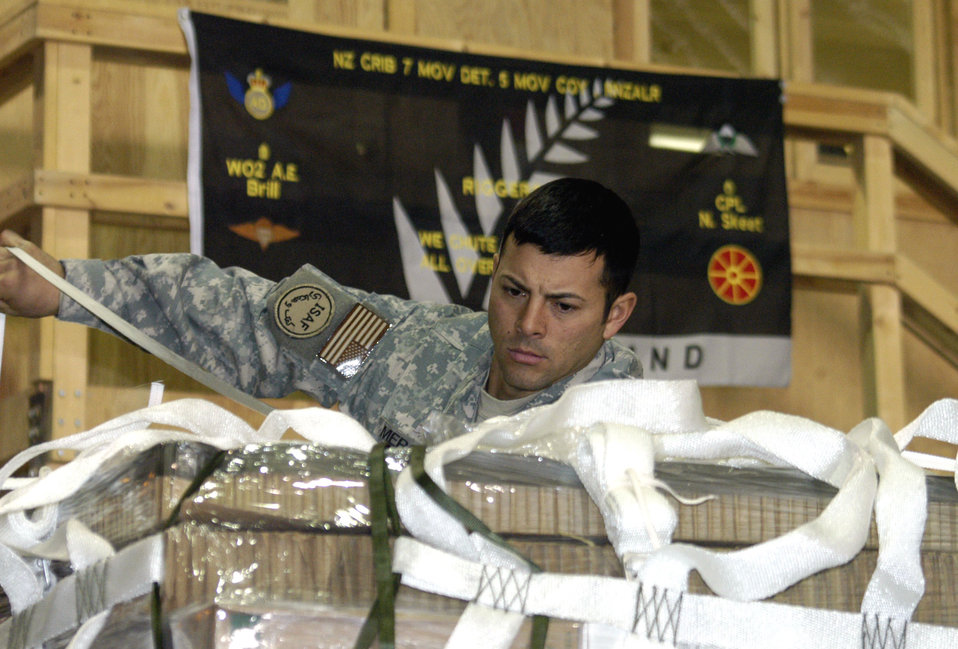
Christmas delivered by air

Staff Sgt. Raul Mercado finishes building a holiday bundle for delivery to forward-deployed troops in austere locations in theater. Aproximately 50 bundles were air-dropped by C-130 Hercules aircrews assigned to 774th Expeditionary Airlift Squadron between Dec. 23 and 28. Sergeant Mercado is a rigger NCO assigned to the 10th Joint Logistics Task Force.